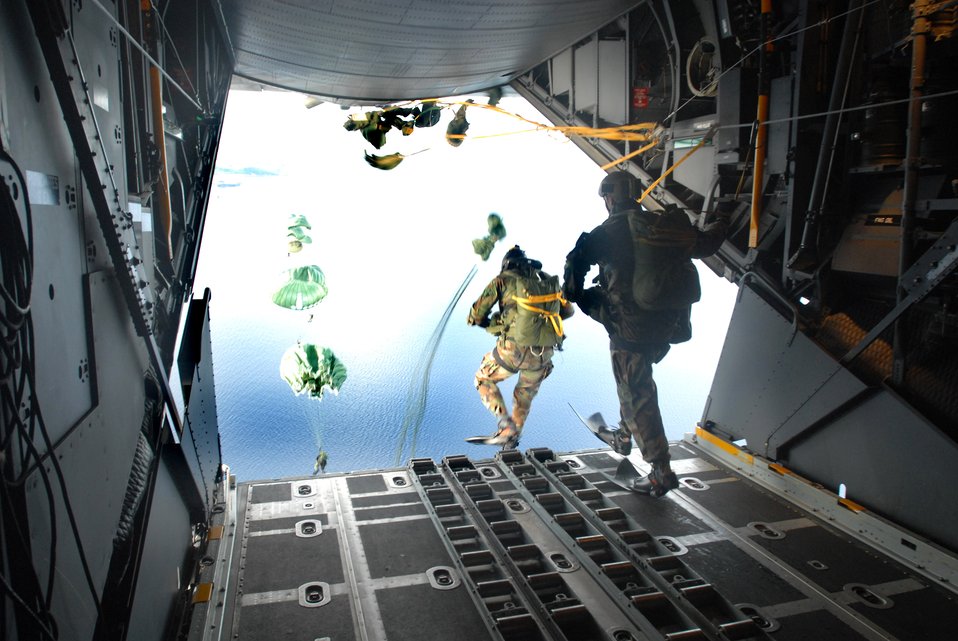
Static-line jump

Pararescuemen from the 31st Rescue Squadron perform a static-line jump out of a C-130 Hercules over water Aug. 29 near Kadena Air Base, Japan. The 18th Wing and the 353rd Special Operations Group conducted an exercise to test their rescue and emergency care capabilities.